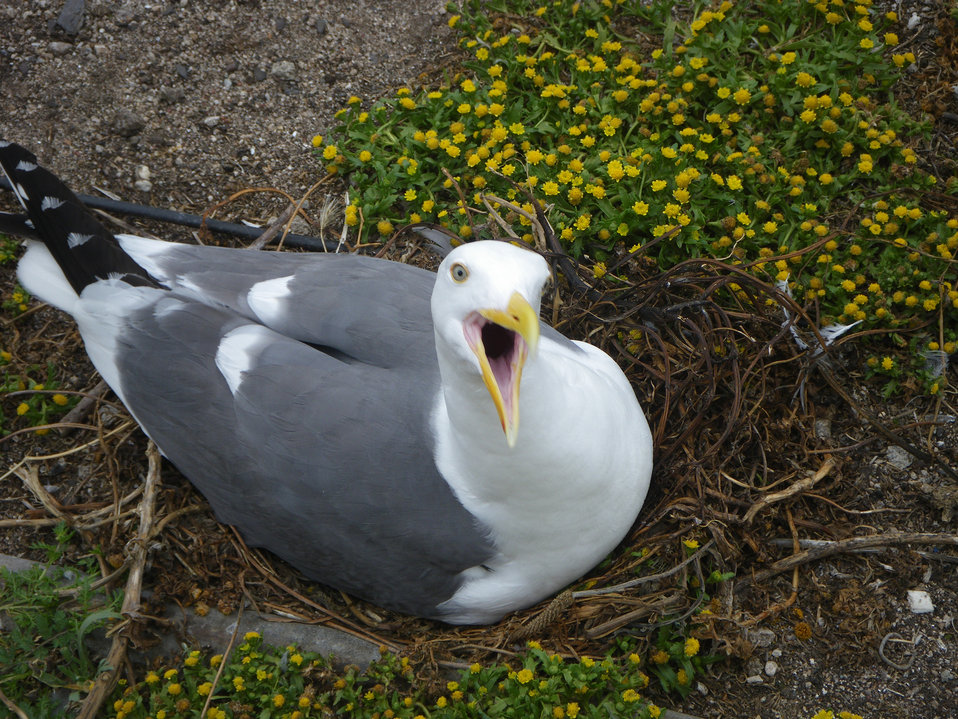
Upset Western Gull